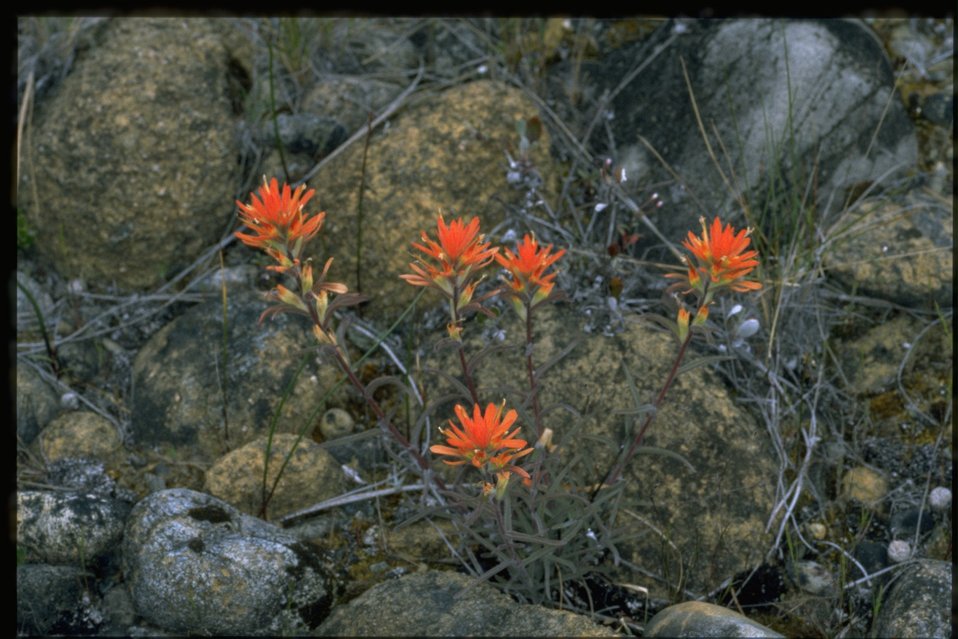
Medium shot of Castilleja.